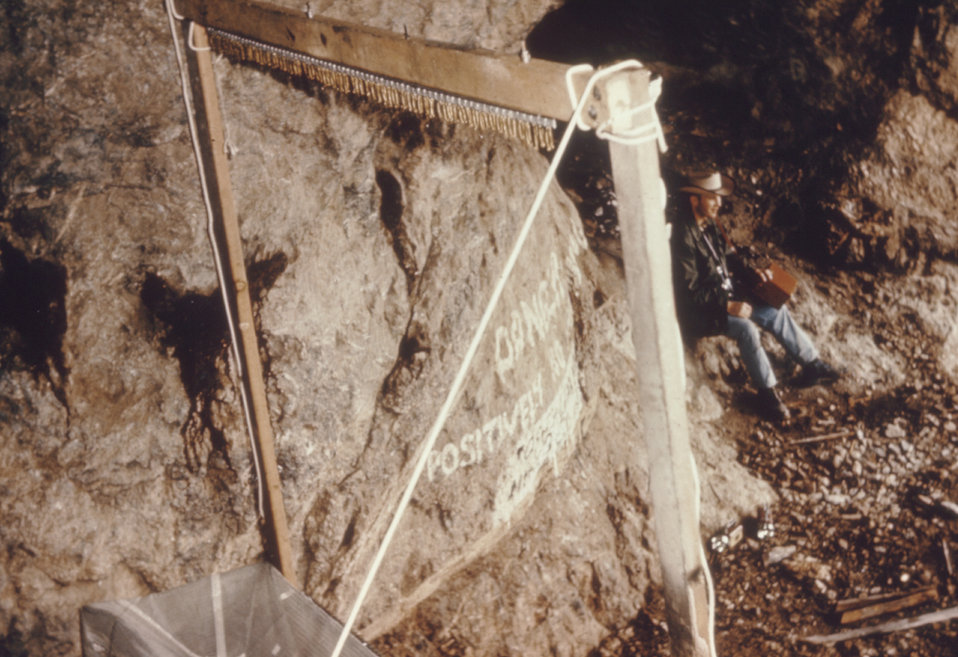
Here a Constantine bat trap (wire collector) was placed within a cave for collecting bats during a 1974 arbovirus study.